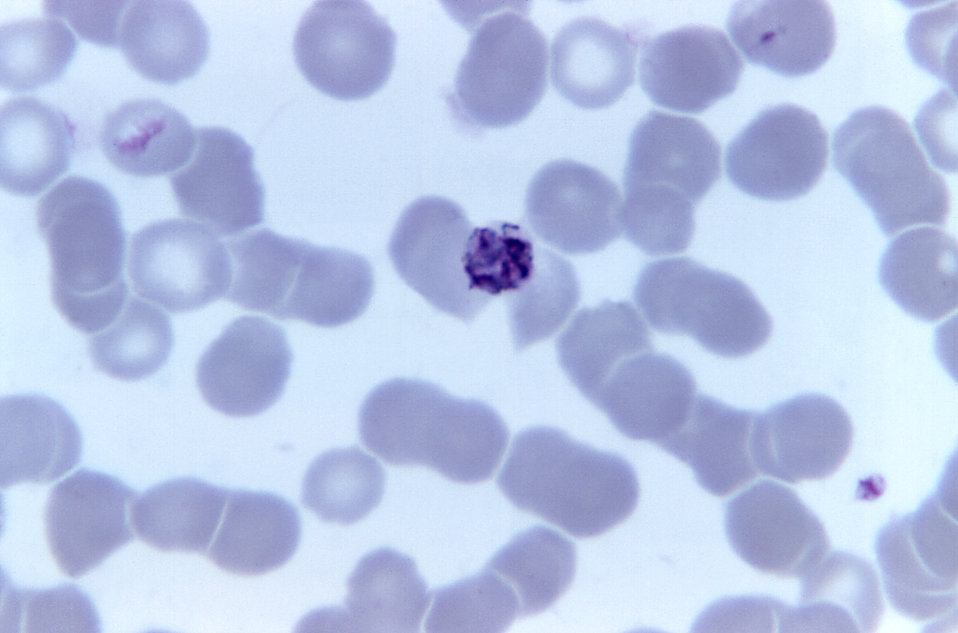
This photomicrograph depicts an old immature Plasmodium malariae schizont using Giemsa stain; Magnified 1125X.